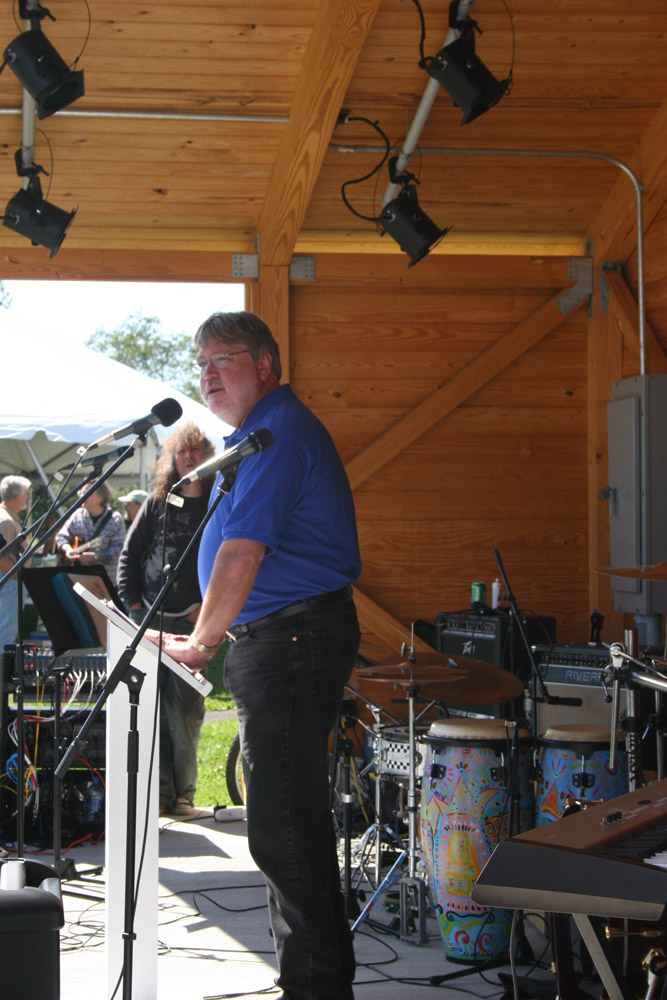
Freshwater Folk Festival

The 5th Annual Freshwater Folk Festival at White Sulphur Springs National Fish Hatchery in West Virginia.Credit: USFWS